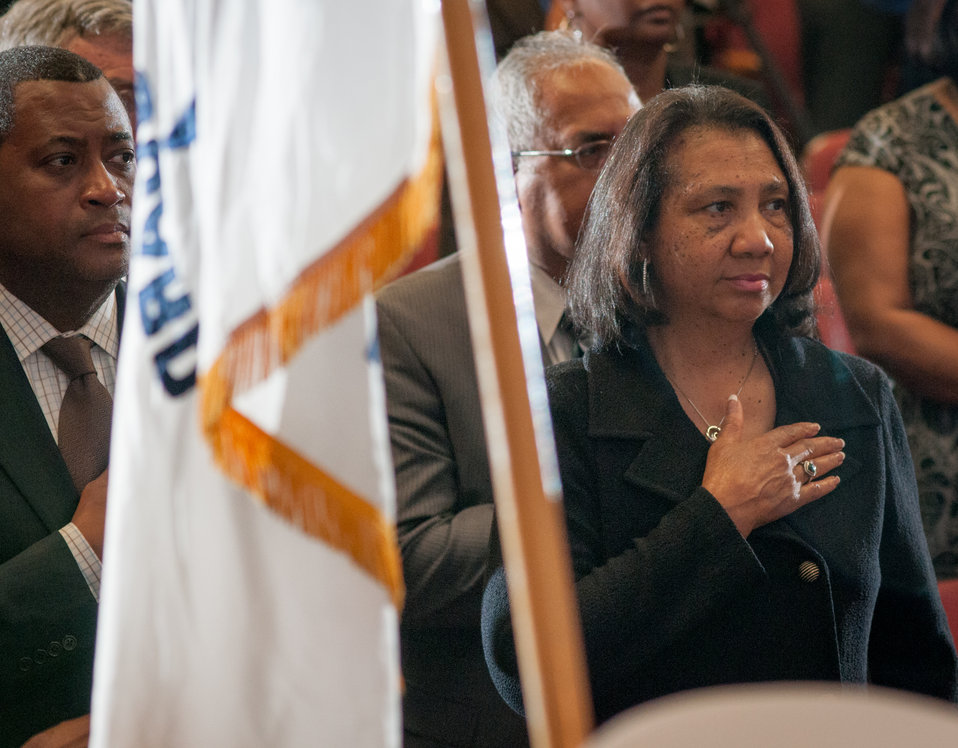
U.S. Department of Agriculture’s (USDA), Associate Assistant Secretary for Administration Dr. Alma Cobb Hobbs (right), and Assistant Secretary for Civil Rights Dr. Joe Leonard (left), holds their hand over their heart, during the playing of the National Anthem, at the USDA Asian Pacific American Heritage Month Observance, at the USDA headquarters in Washington, D.C., on Thursday, May 23, 2013. This year’s theme is “Building leadership; Embracing the Cultural Values and Inclusions.”